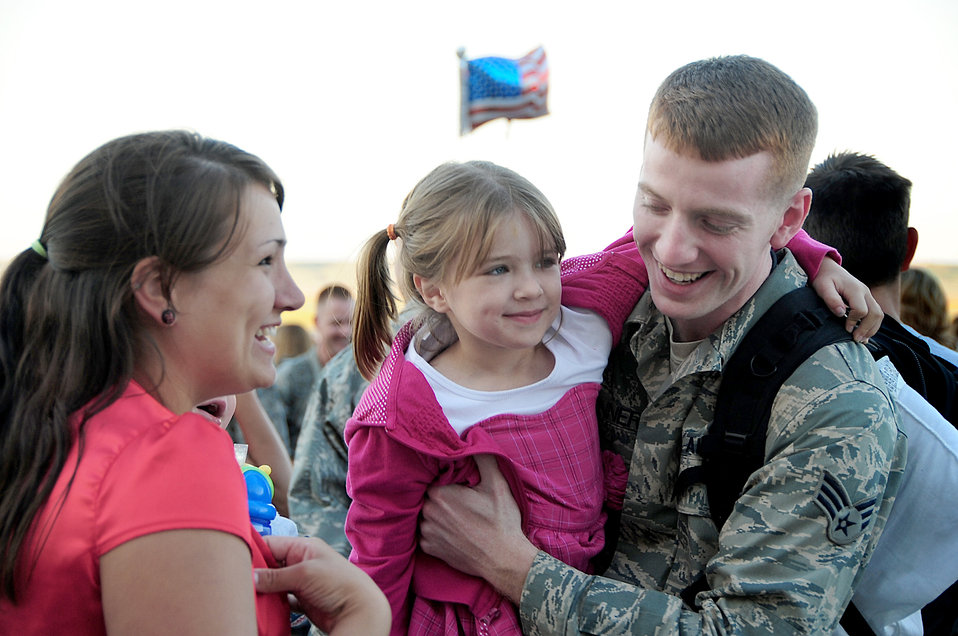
Talking it out -- getting through deployment

Senior Airman David Benner is reunited with his wife, Kristy, and his daughter, Josie, July 28, 2010, at Ellsworth Air Force Base, S.D., after a deployment to Southwest Asia. More than 190 Airmen were greeted by friends, family and co-workers. Airman Benner is a conventional munitions maintainer assigned to the 28th Munitions Squadron.